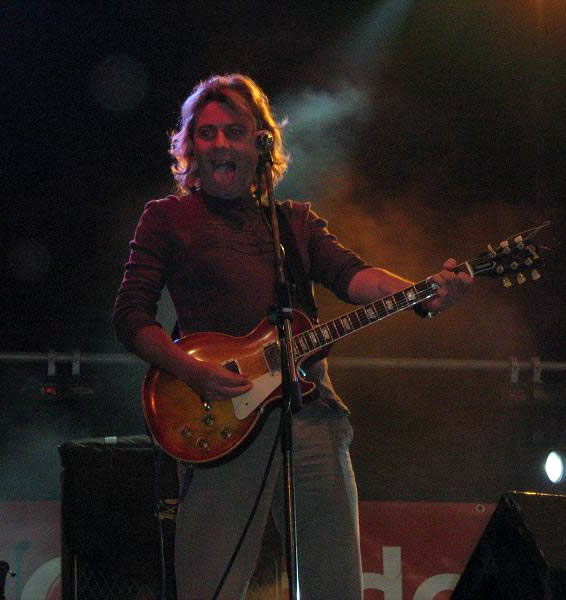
Română: Chitaristul, compozitorul, textierul și orchestratorul român Victor Solomon